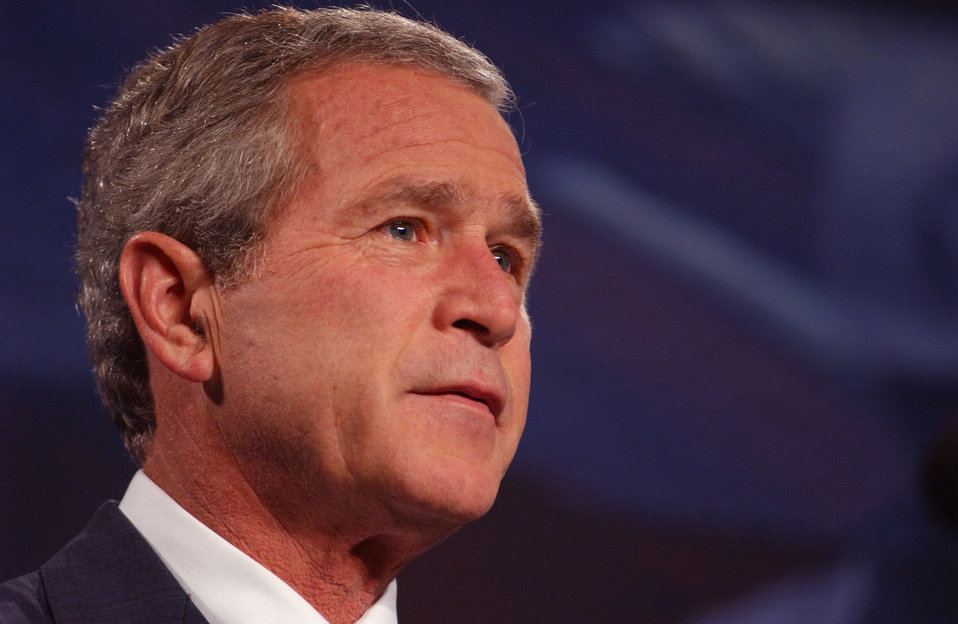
President George W. Bush visit to Oak Ridge National Lab.

04-164-170 DOE photo by Lynn Freeny
President George W. Bush visit to Oak Ridge National Lab. Oak Ridge Tennessee 7-12-2004